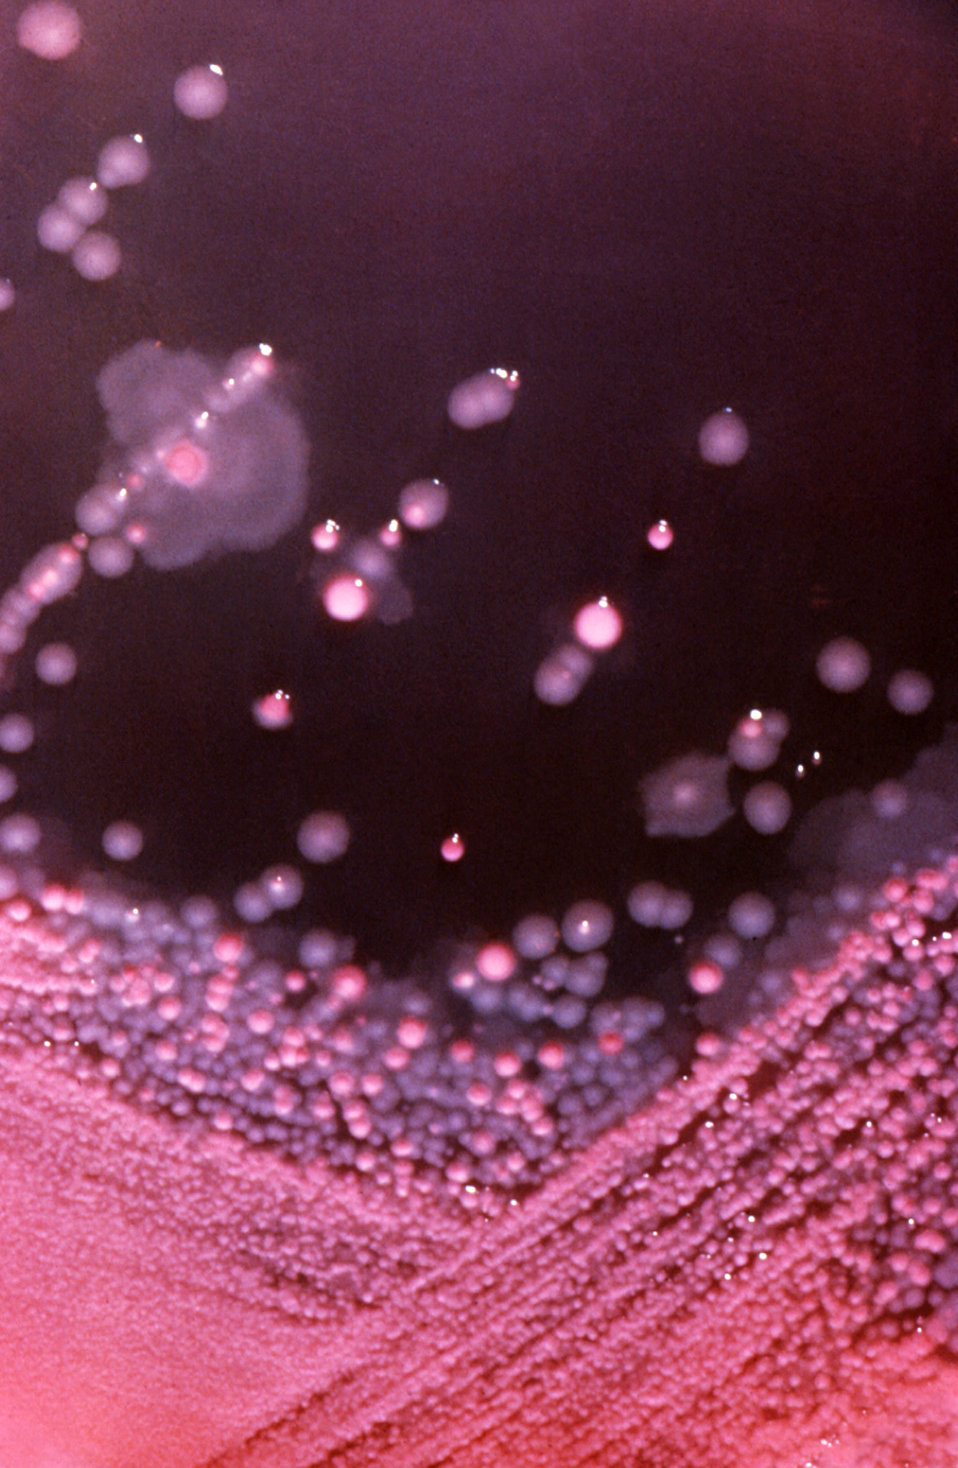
This MacConkey plate grew colonies of E. coli, F. mortiferum, P. vulgaris, but not C. perfringens.